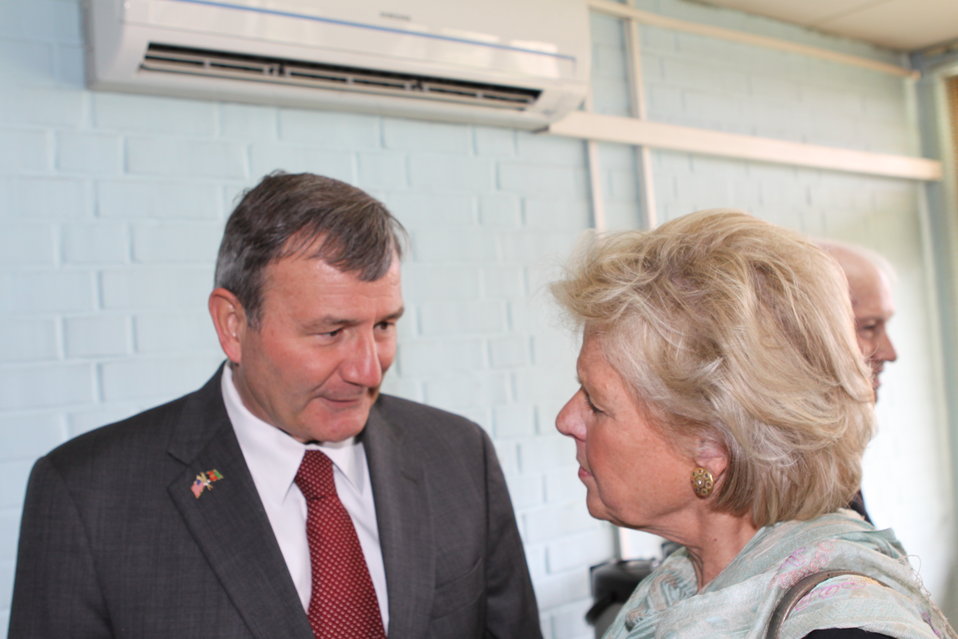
100526 AUAF Graduation 035